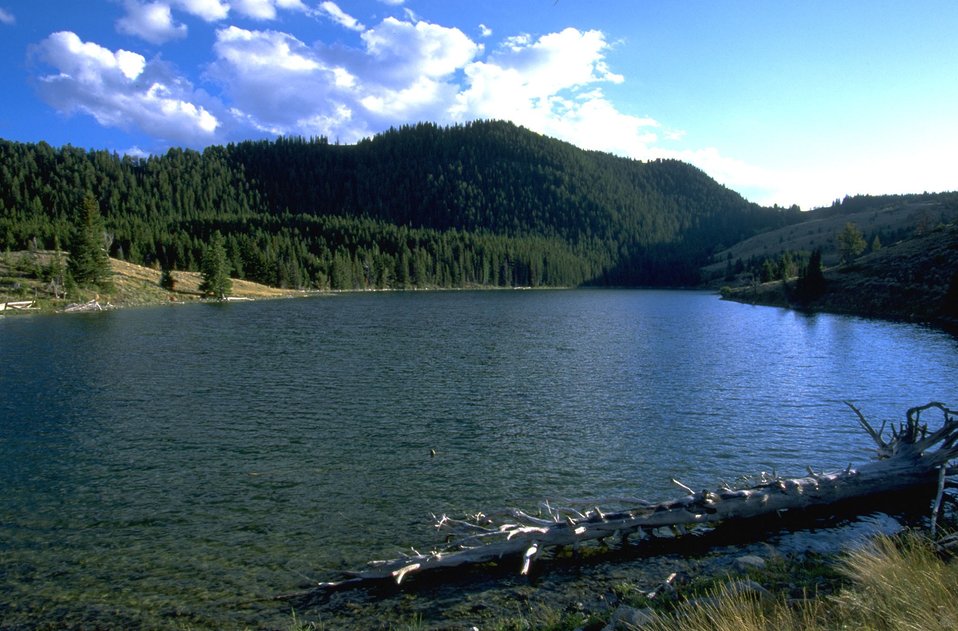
Dead tree in lake